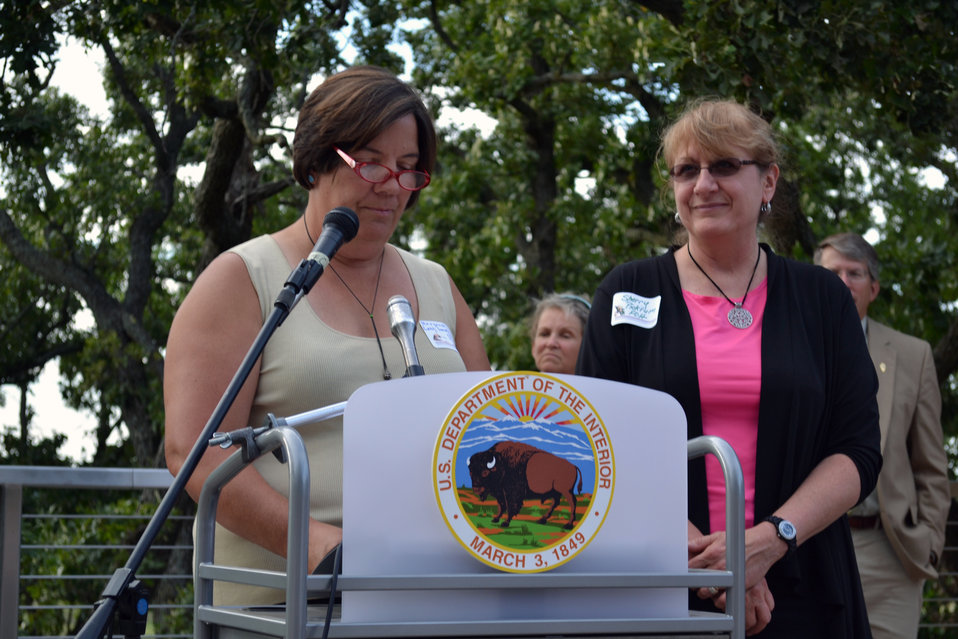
Co-Chairs for Friends of Hackmatack

'Today is a good day for the planet,' remarked Co-Chairs for Friends of Hackmatack Margaret Lass-Gardiner.